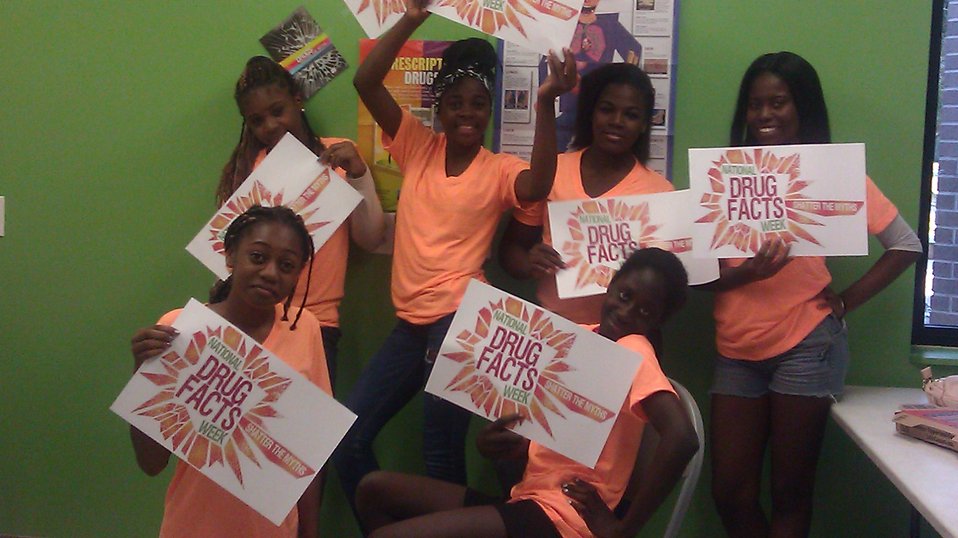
Orlando Teens 'Shattering the Myths'

Teens make a statement during the 2014 National Drug Facts Week Orlando, Florida.